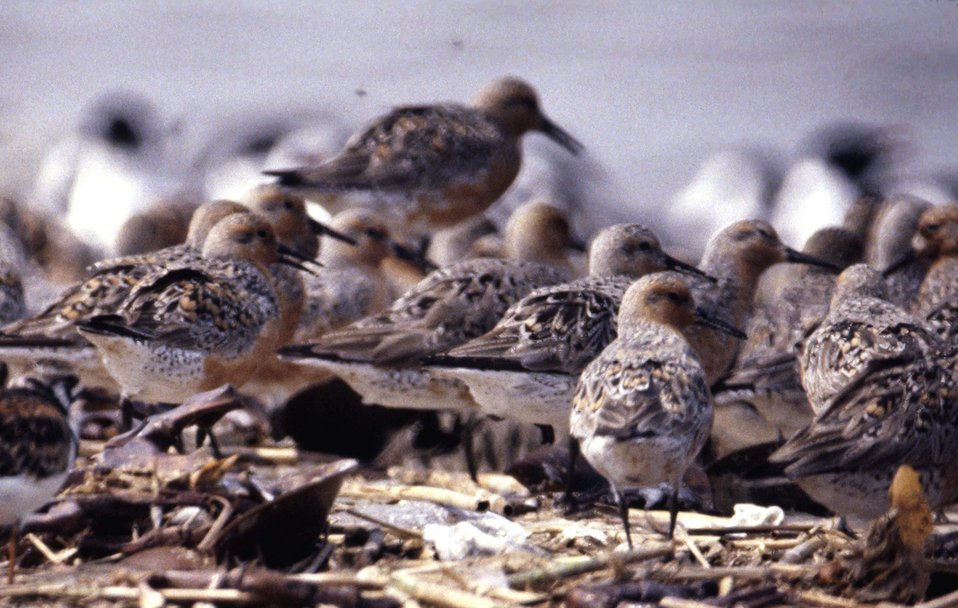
Red Knots

Reed's Beach, NJ.